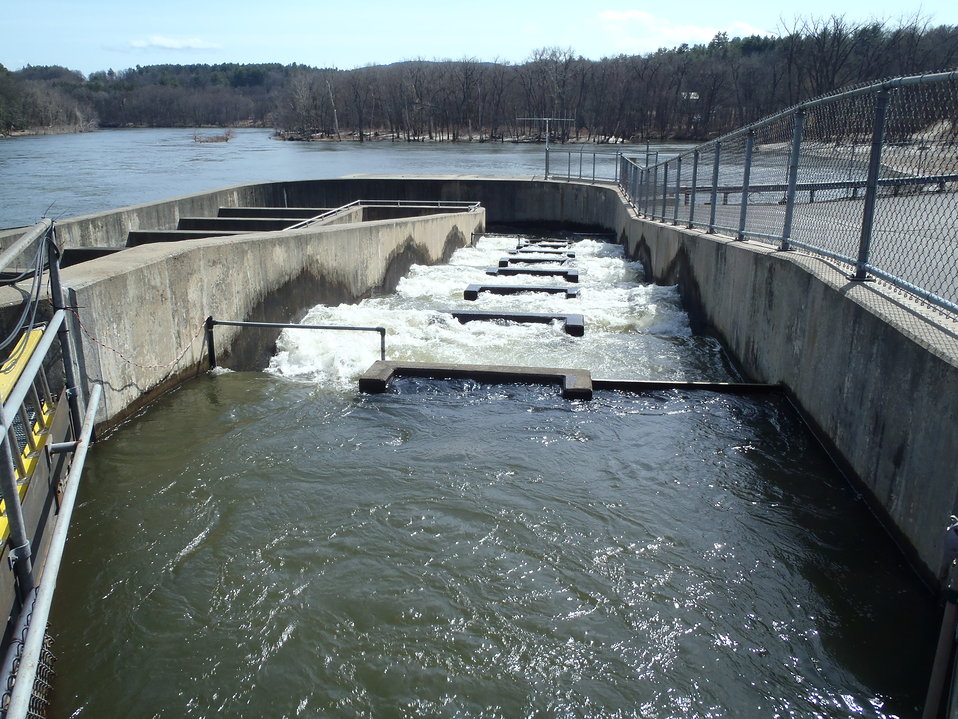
Ice Harbor fish ladder in VT 1